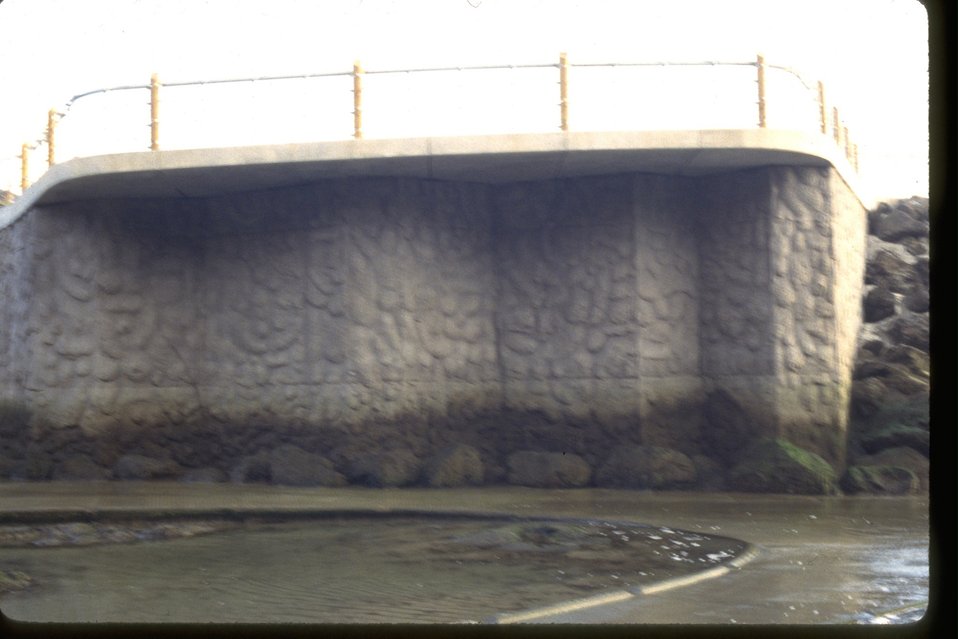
Quarry Cove overlook wall at Yaquina Head.